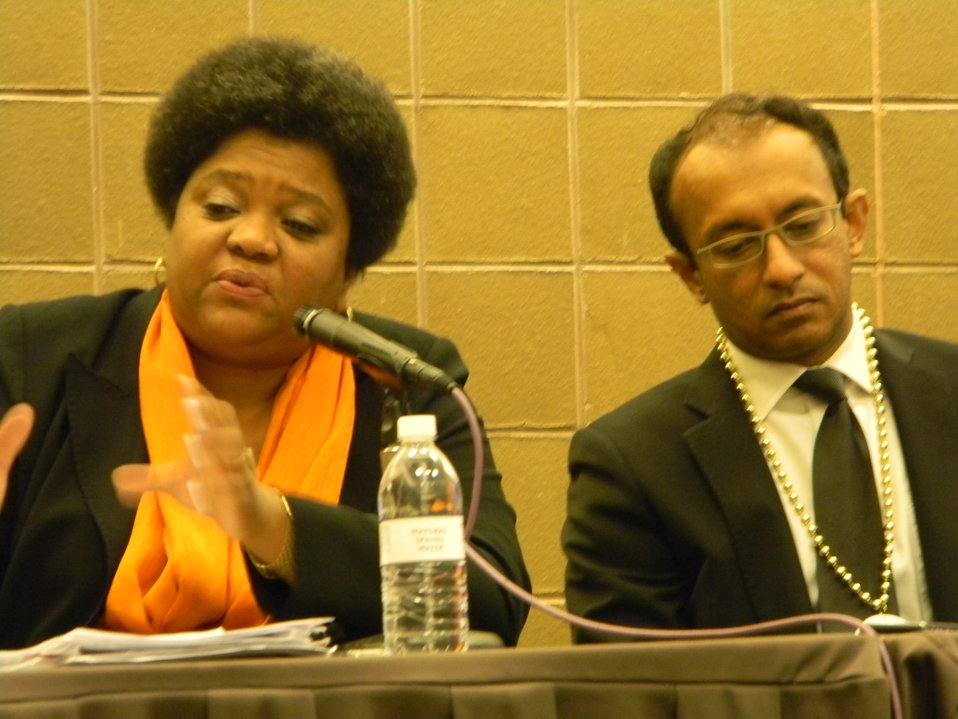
2012 National Urban League Conference

Charisse Lillie, Vice President of Community Investment, Comcast Corporation
President, Comcast Foundation & Madura Wijewardena, Director of Research and Policy
NUL Policy Institute both served as panelist on the the Job Creation and Education: Programmatic Efforts to Increase Broadband Adoption in African American Communities panel.